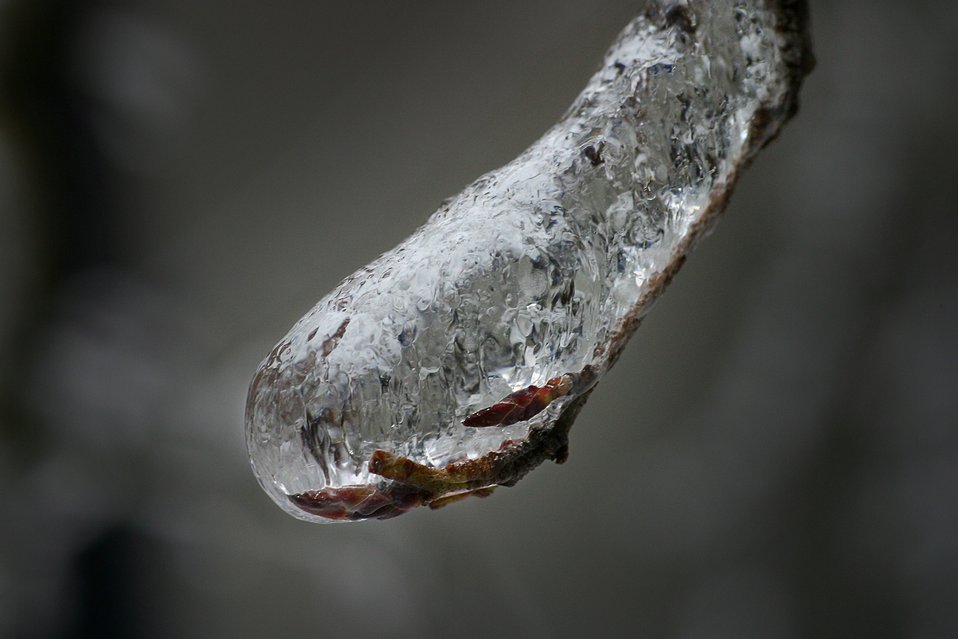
Ice on Service Berry branch.